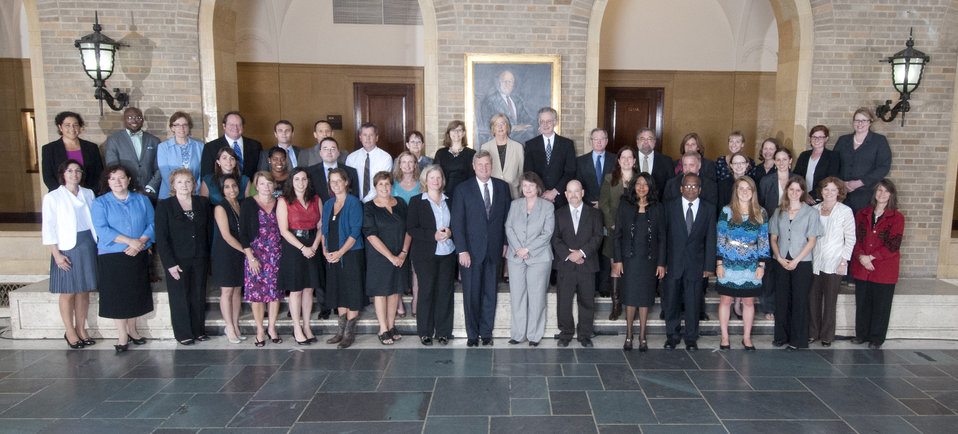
Agriculture Secretary Tom Vilsack and Deputy Agriculture Secretary Kathleen Merrigan with Know Your Farmer, Know Your Food Office of the Secretary Honor Award Group on the patio of the U.S. Department of Agriculture in Washington, D.C. on Wednesday, Sept. 12, 2012. The Know Your Farmer, Know Your Food Initiative Taskforce is an interagency effort that has strengthened and coordinated USDA support for regional food systems, developed innovative outreach tools, and created new opportunities in rural America.